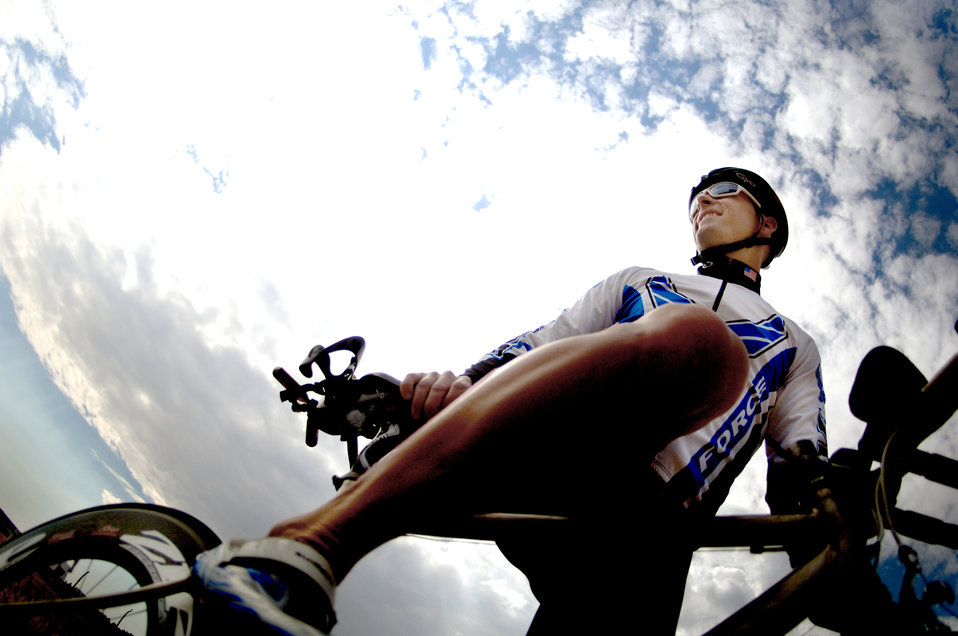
Academy officer picked for top triathlon

Maj. Scott Poteet, the adviser for Air Force Academy Cadet Squadron 02, trains for the 2010 Ironman Triathlon Oct. 4, 2010 at the Academy. Poteet's regimen includes more than three hours of training per day biking, swimming and running. The Ironman Triathlon takes place Oct. 9 in Kona, Hawaii.